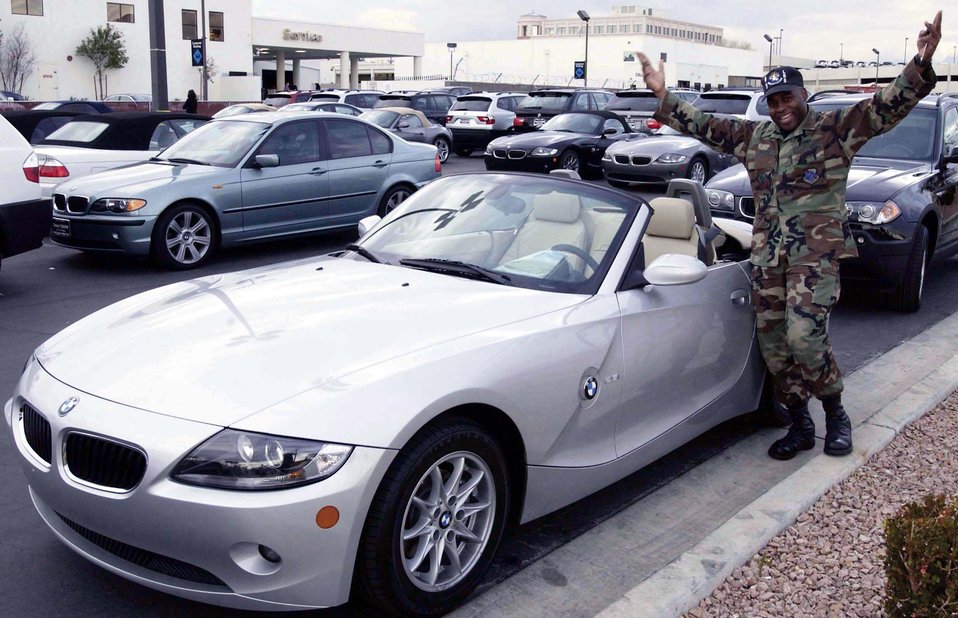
Airman spins the wheel to 'Big Money'

LAS VEGAS -- Second Lt. Eric Mason visits a local dealership to check out the BMW he won on the 'Wheel of Fortune.' He is assigned to the 99th Logistics Readiness Squadron at nearby Nellis Air Force Base, Nev.